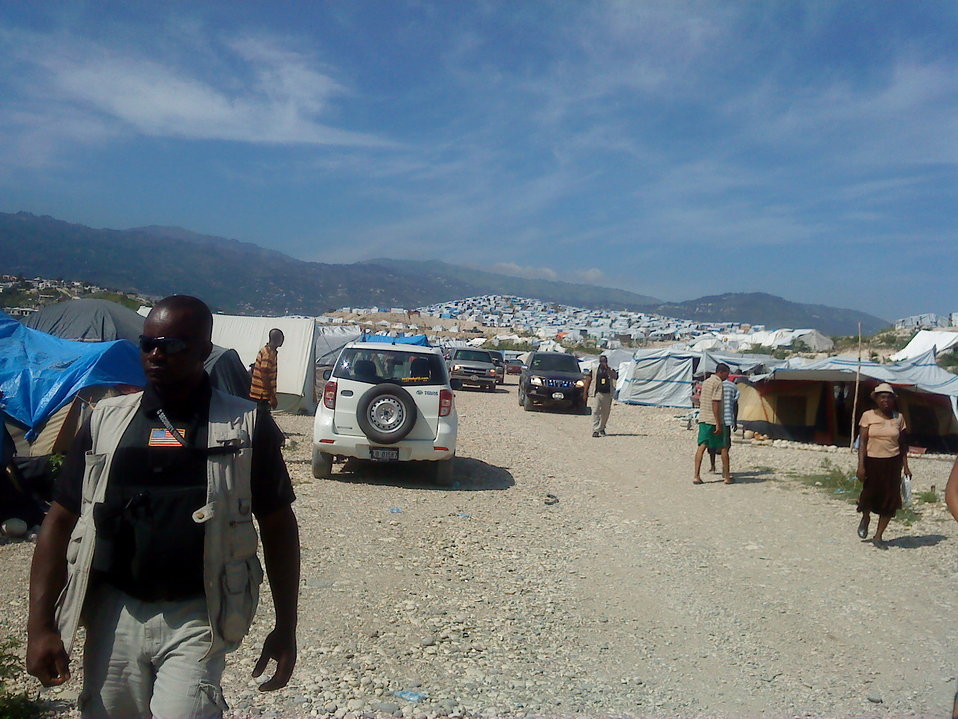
Under Secretary Lael Brainard visits Haiti, 7/29/2010

Under Secretary Lael Brainard visited three projects that underscore the MDBs’ responsiveness to the needs of the most vulnerable population and of small and micro-businesses post-earthquake.